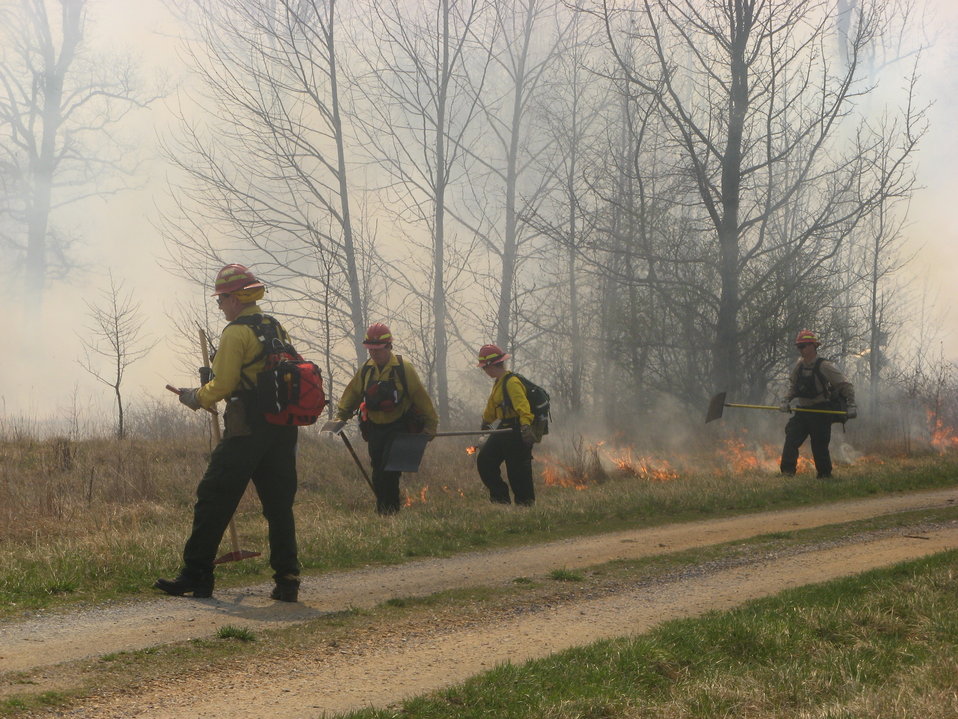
Controlled burn ignition

Laurel, MD: Firefighters light a controlled burn with drip torches at Patuxent National Research Refuge to maintain habitat for grassland birds.